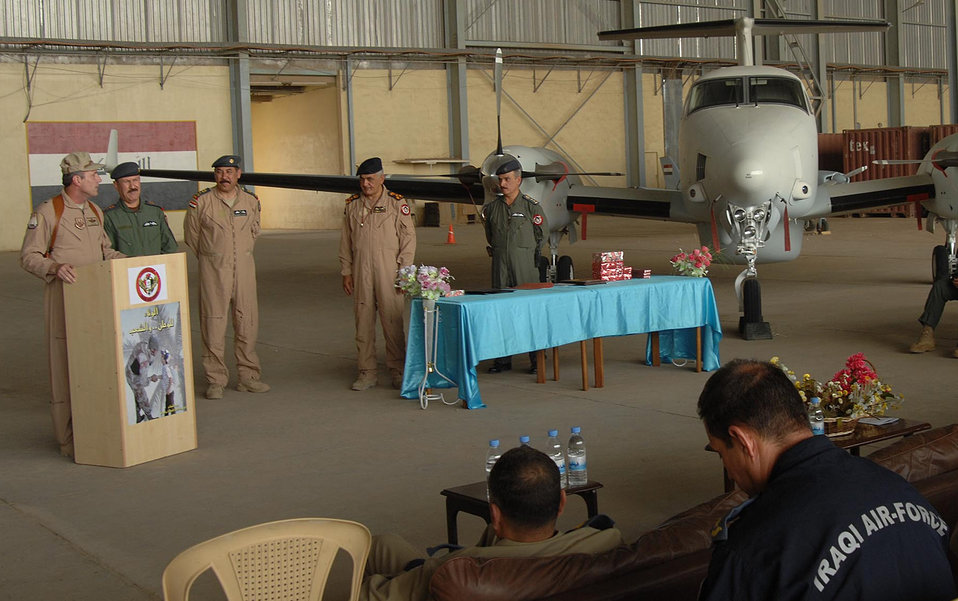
Operation Iraqi Freedom

Brig. Gen. Robert Kane talks to the attendees of the Iraqi King Air graduation at New Al Muthana Air Base, Iraq, May 17, while the Iraqi air force commander, Staff Lieutenant General Anwar, looks on. General Kane is the 321st Air Expeditionary Wing and Coalition Air Force Training Team commander.